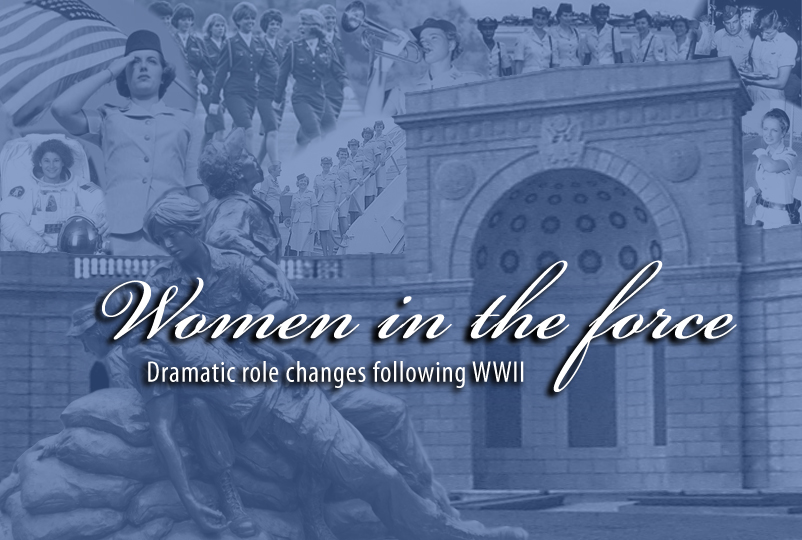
Women in the force